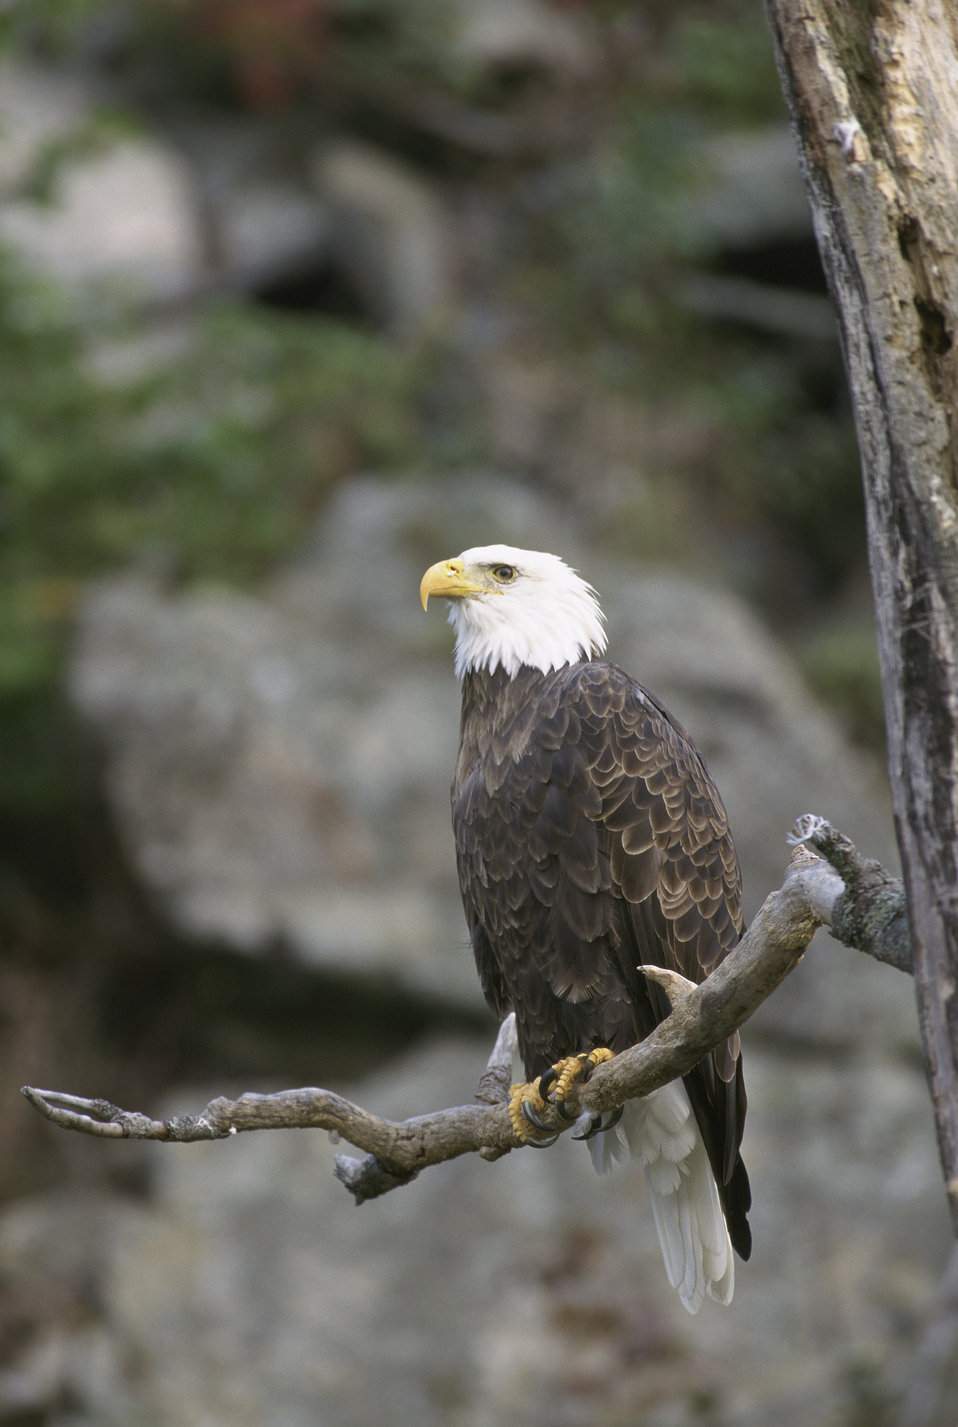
Bald eagle sitting on tree branch